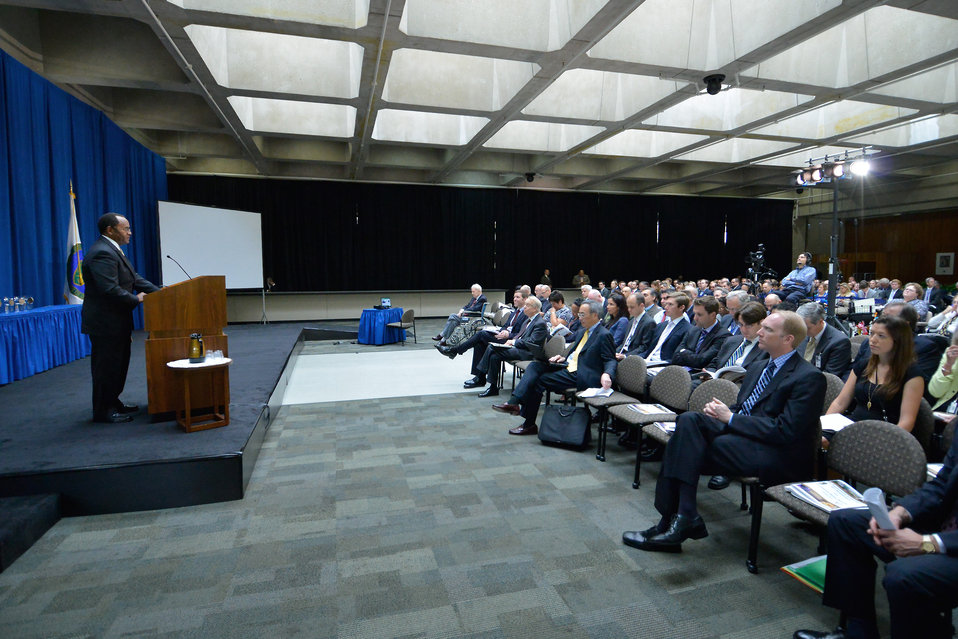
Audience

The 35th Anniversary and Honors Awards were held at the Forrestal Building in Washington, D.C.